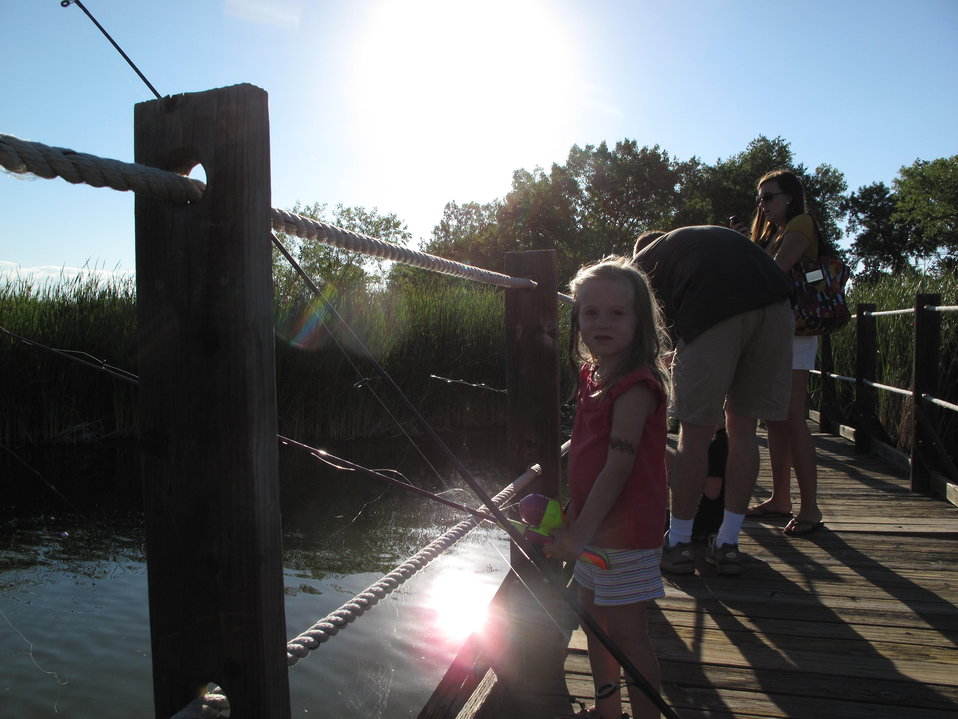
Environmental Learning for Kids Program Fishing